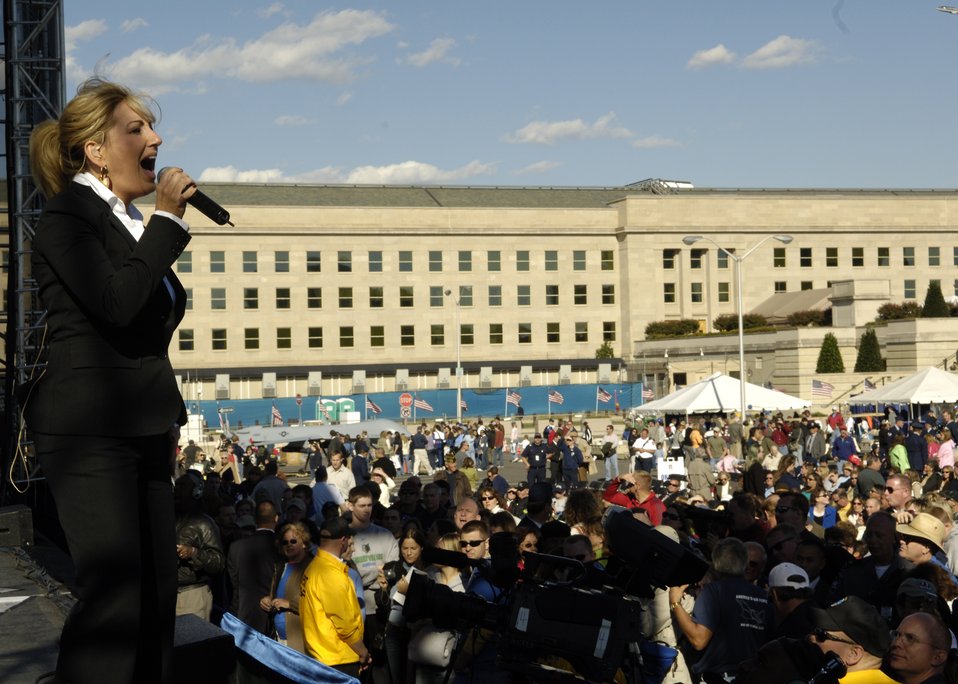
Lee Ann Womack performs

Country music performer Lee Ann Womack performs for more than 25,000 spectators gathered at the Air Force open house at the Pentagon on Saturday, Oct. 14, 2006. The concert followed the official dedication ceremony of the Air Force Memorial.